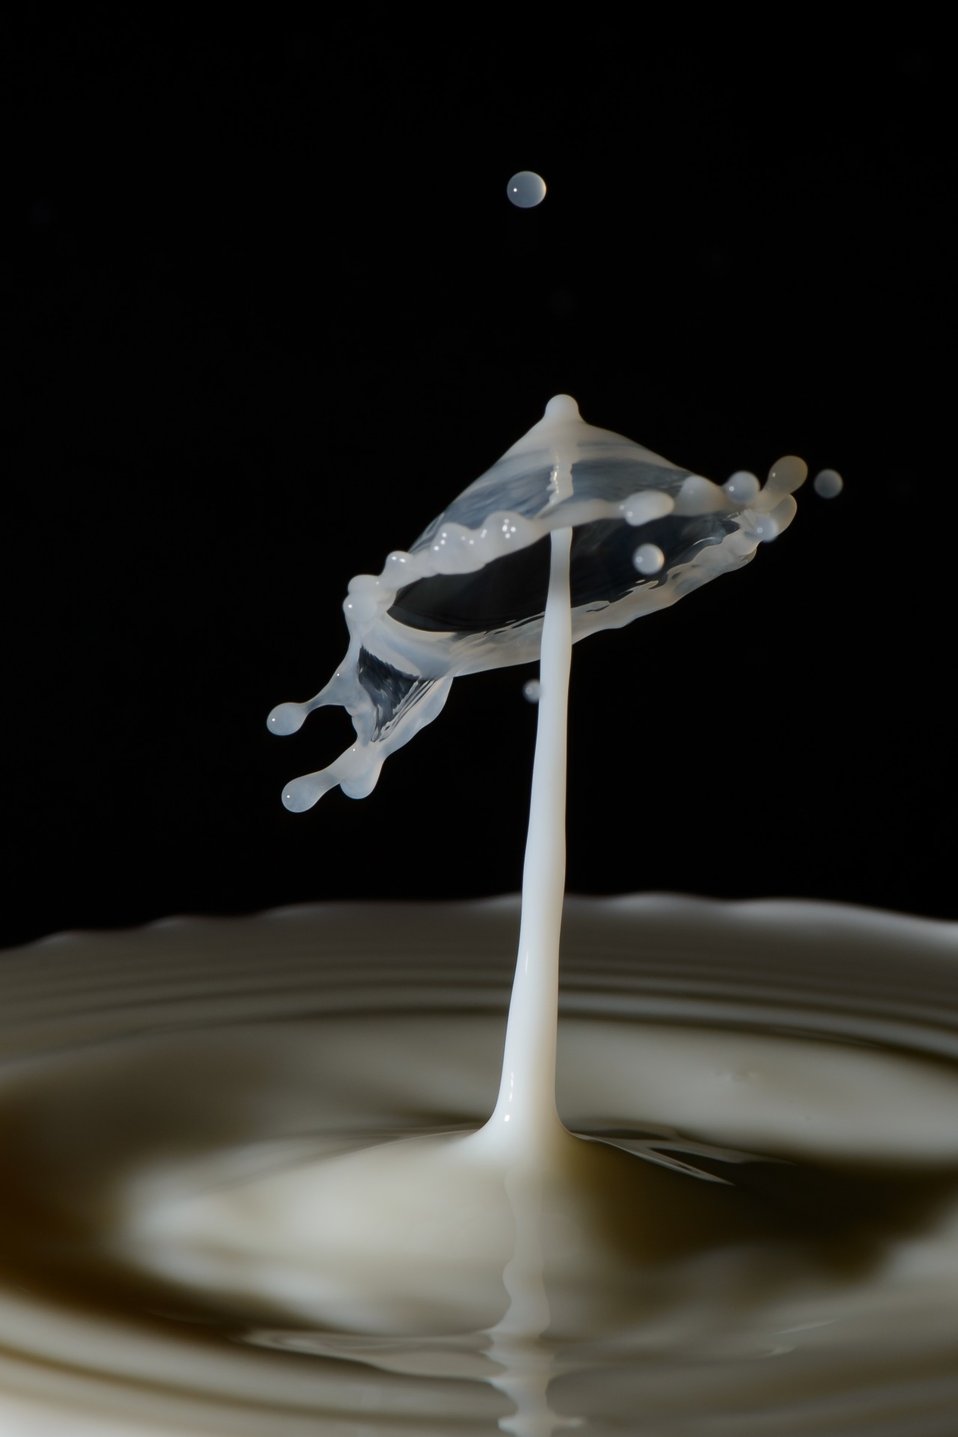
Milk veil

Two drop collision.